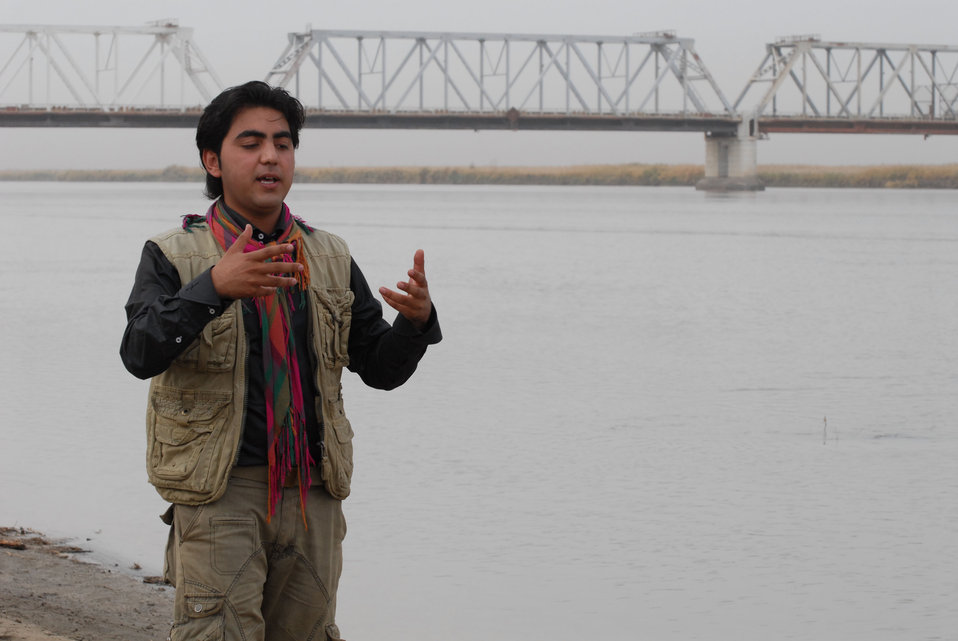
'On the Road' in Balkh Province